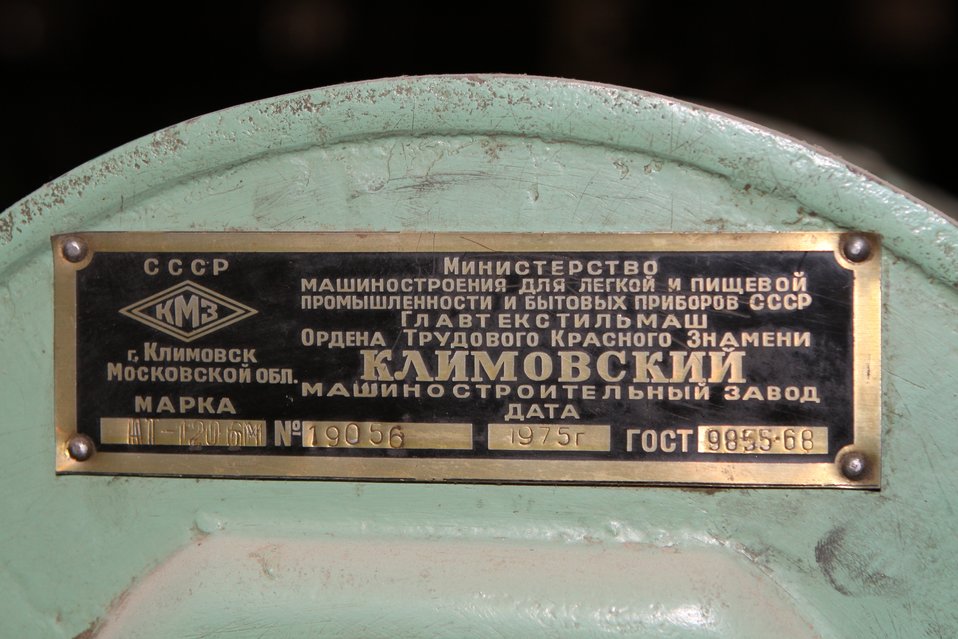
100525 Hirat Textile Company 745